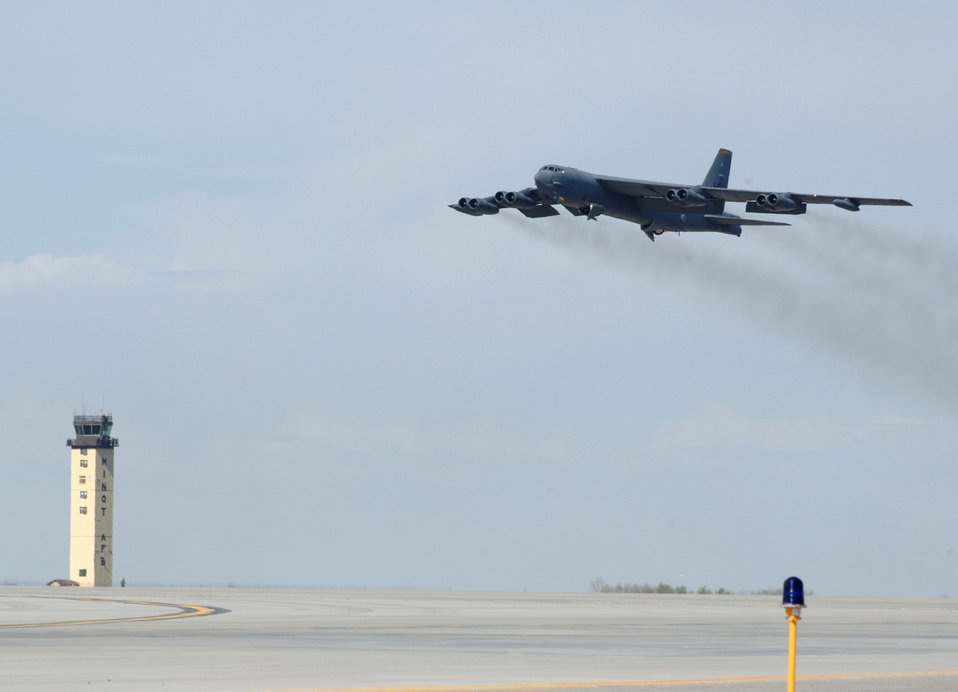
Rapid launch at Minot

A B-52 Stratofortress takes off from Minot Air Force Base, N.D., during a nine-ship rapid-launch generation exercise on Thursday, April 27, 2006. Generation exercises test the base's ability to perform its mission.